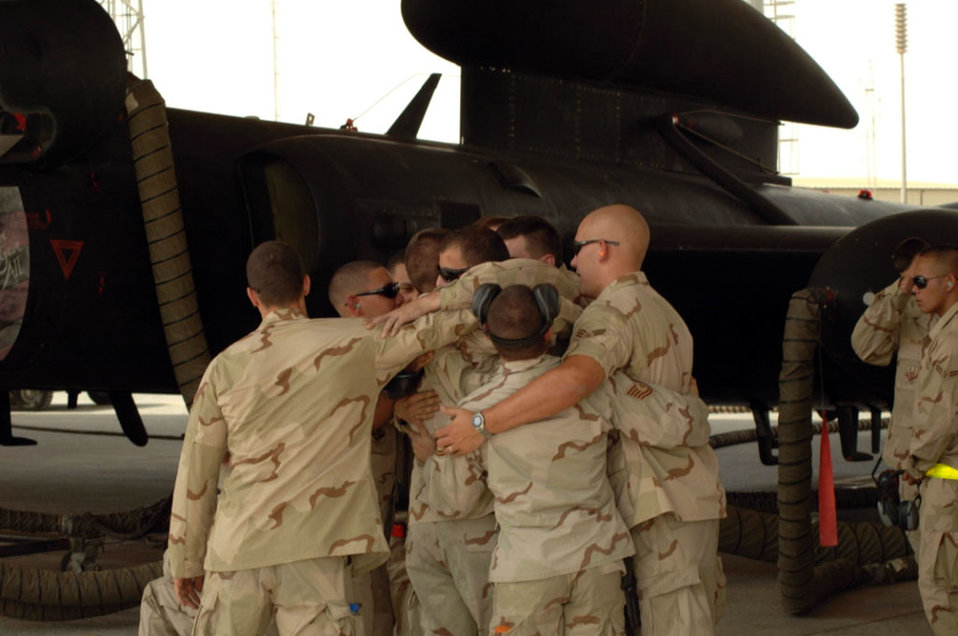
U-2 nose art honors fallen Soldier

Airmen surround U-2 crew chief A1C Alexander Zwilling in front of an aircraft featuring chart artwork honoring his late brother, who was killed July 13, 2008, while serving with the Army in Afghanistan.